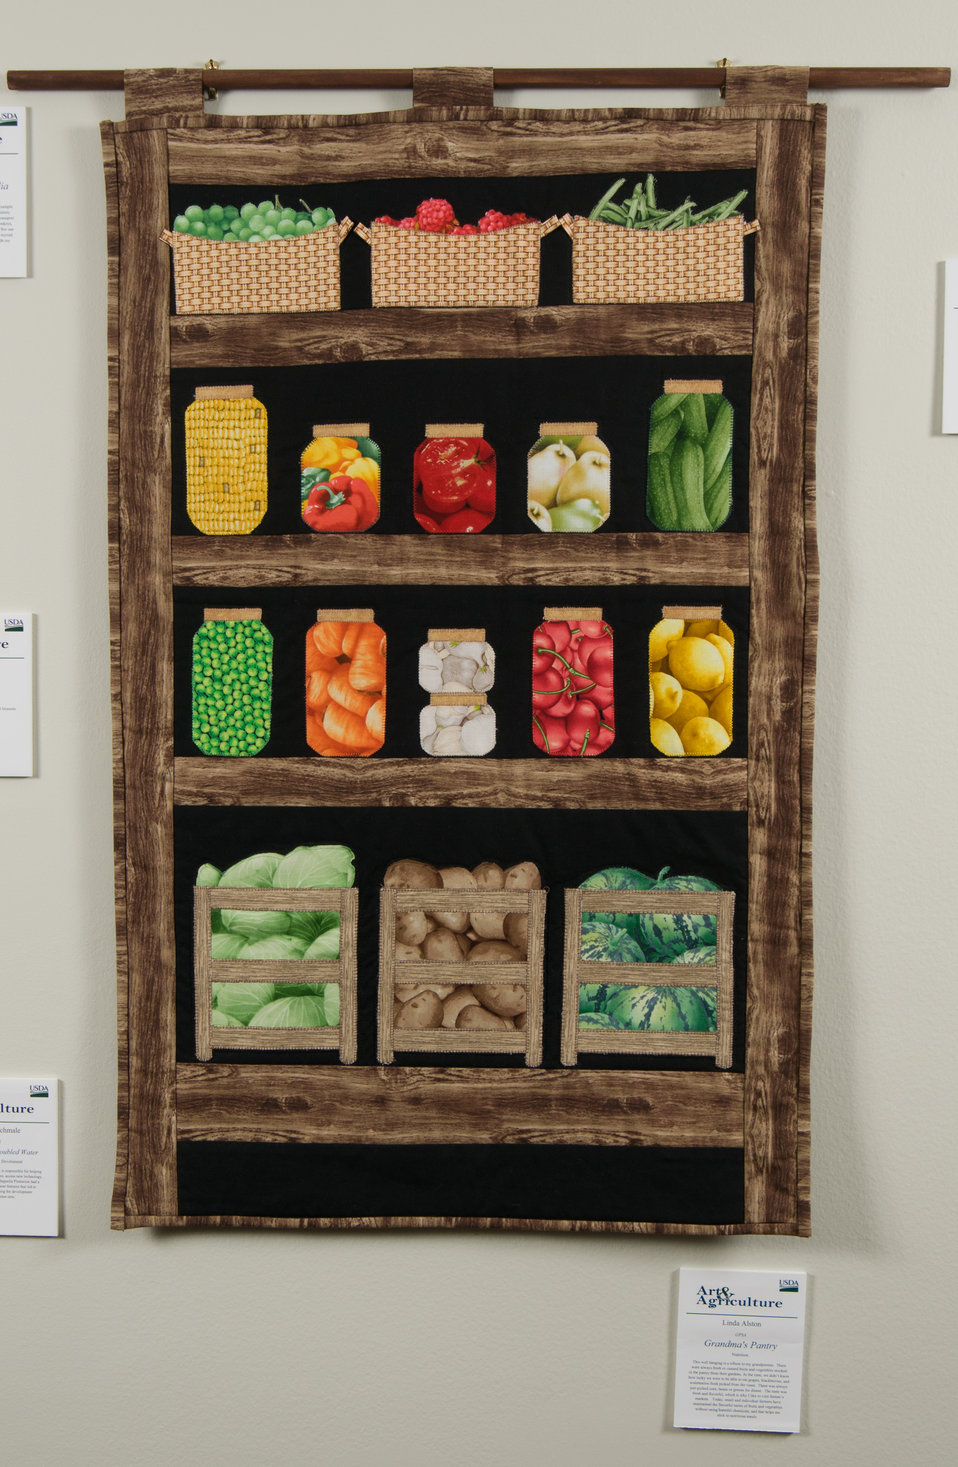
Online Viewer's Choice entries of the 2013 Art & Agriculture, Tuesday, July 9, 2013, in the South Building, Washington, D.C. Themes were expressed by employees from across the department and the contest was open to full-time and part-time USDA employees. Winning artwork will be displayed till the end of the year. U.S. Artistic expression is a creative outlet that is vital for an individual to grow and develop.